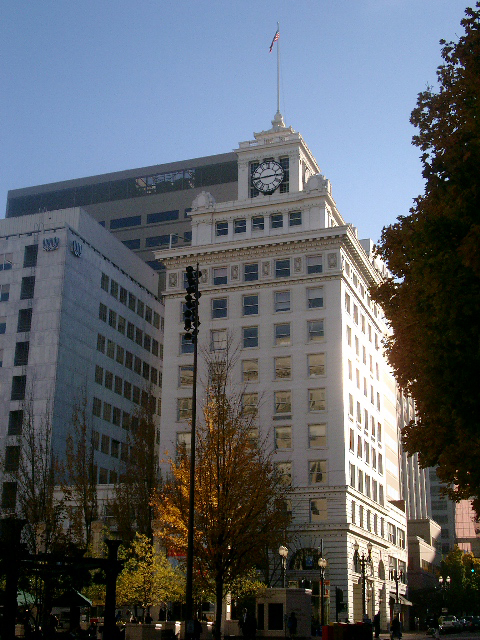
The en:Jackson Tower in en:Portland, Oregon. The building is listed on the National Register of Historic Places under its historic name, Journal Building. Taken by myself, Ajbenj.